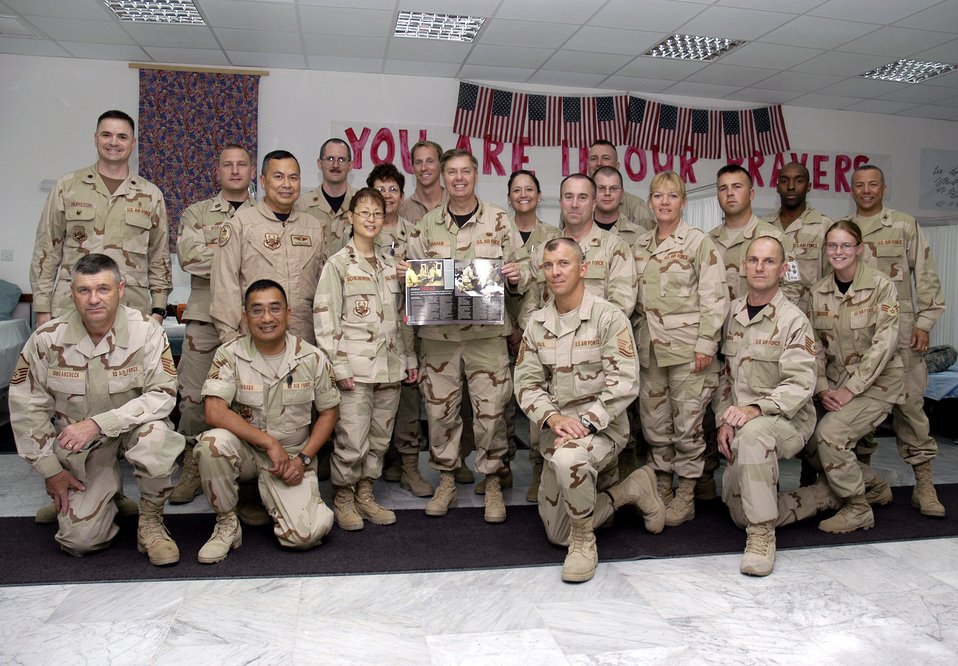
Senator visits Iraq, spends week on active duty

Col. Lindsey Graham poses with members of the 386th Expeditionary Medical Group April 9 in the Contingency Air Medical Staging Facility in Southwest Asia. The senior senator from South Carolina is a Reserve judge advocate. He recently spent two days in Iraq with Sen. John McCain, then another eight days as a JA with the Multinational Force, Iraq. Colonel Graham is holding a copy of the Desert Voice open to an article that was written on the CASF.